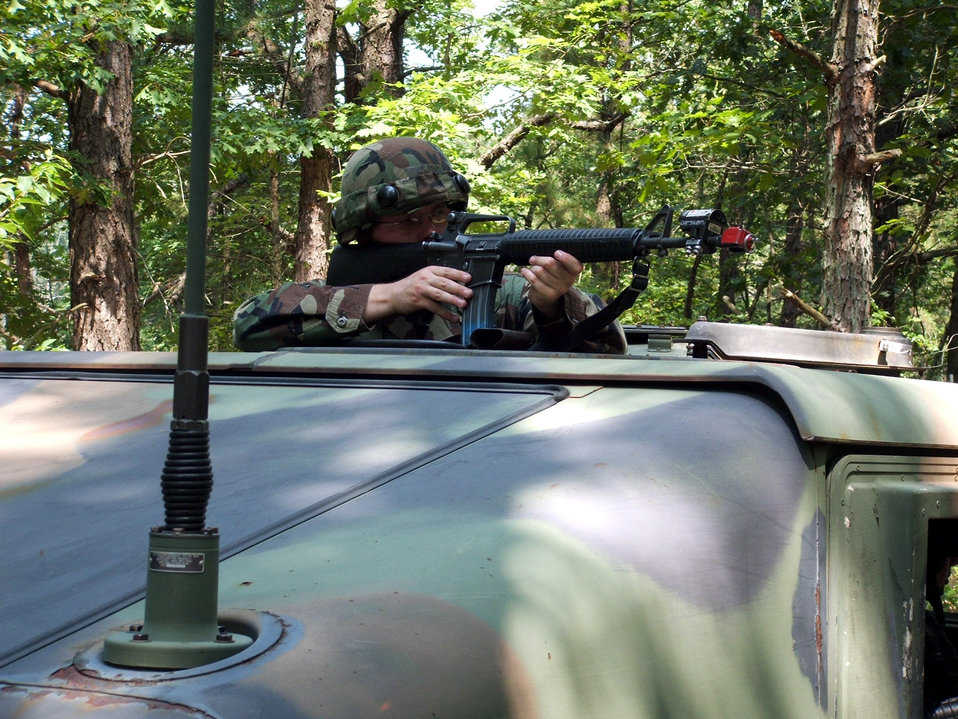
'Deployed' to New Jersey

FORT DIX, N.J. -- Staff Sgt. Nathan Gallahan stands ready with his M-16 during convoy training for the contingency skills training course here. Sergeant Gallahan, along with more than 50 other Airmen, participated in the training to prepare for future deployments. Sergeant Gallahan is a public affairs journeyman from Fairchild Air Force Base, Wash.